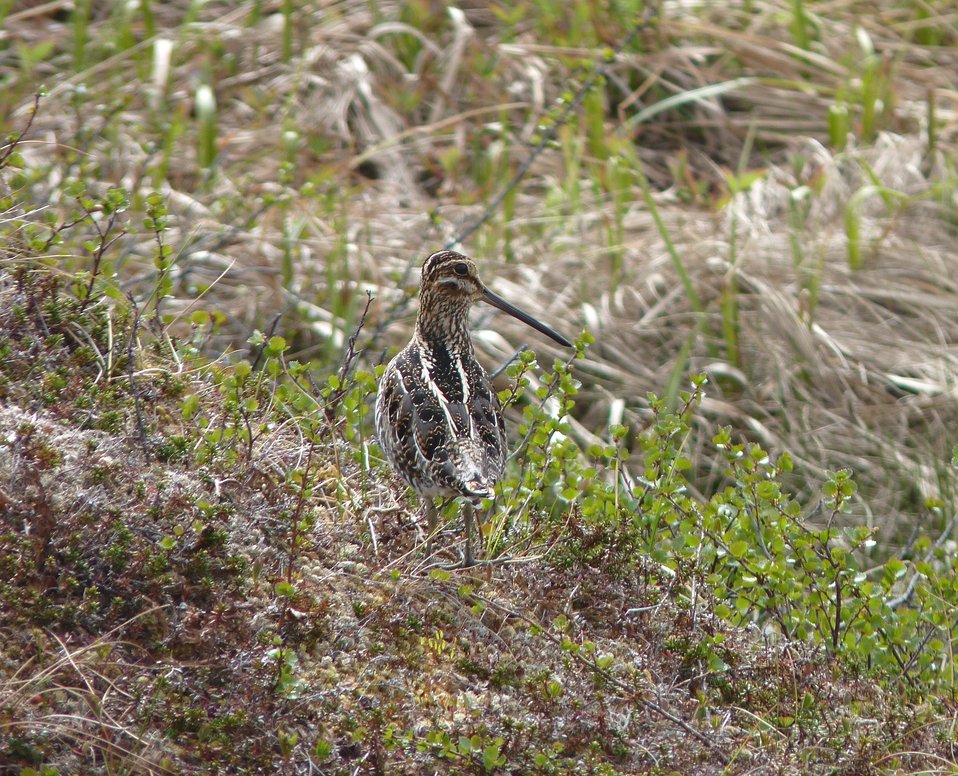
Wilson's snipe

Andreafsky wilderness, Yukon Delta National Wildlife Refuge